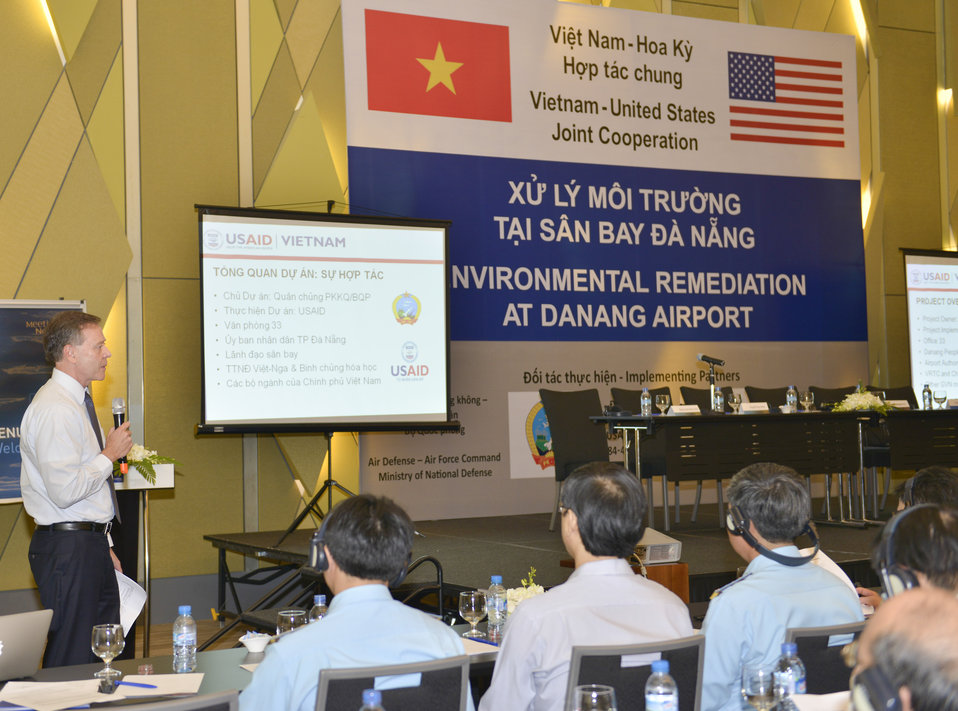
Community Outreach Session on Environmental Remediation of Dioxin Contamination at Danang Airport Project

Danang, March 25, 2014.